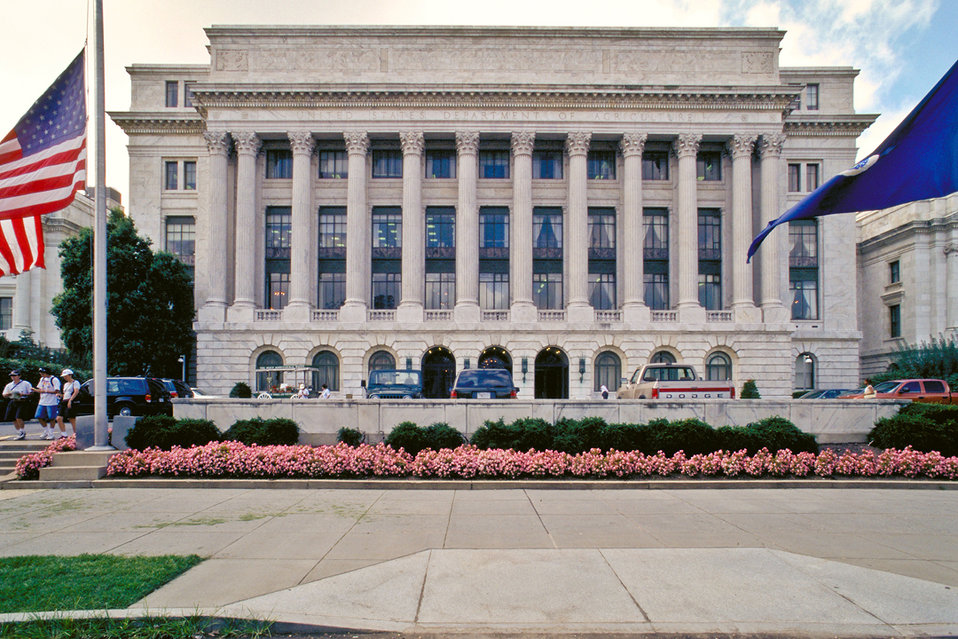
The Jamie L. Whitten, Federal Building, U.S. Department of Agriculture in Washington, D.C.